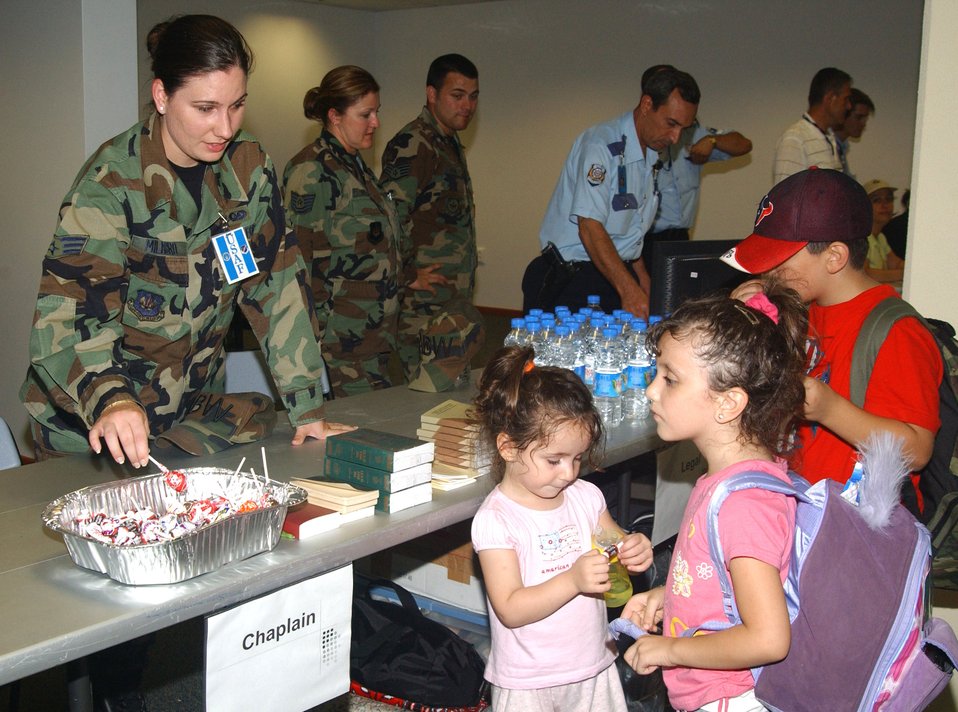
Incirlik continues helping Americans leaving Lebanon

Senior Airman Tianna Milagro offers candy to children arriving at Incirlik Air Base, Turkey, on July 24. The children are among the Americans who left Lebanon and were transiting Turkey on their way to the United States. Airman Milagro is assigned to the 39th Air Base Wing.